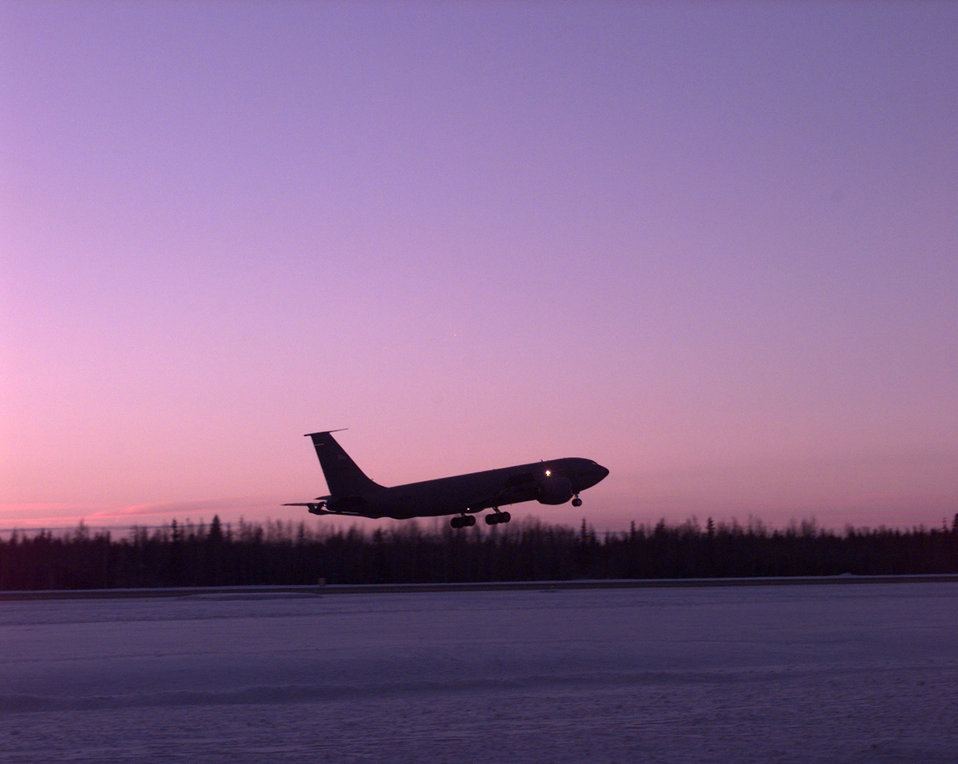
Alaskan refueler

OPERATION SOUTHERN WATCH -- Just as evening falls, the lead KC-135R from the 168th Air Refueling Wing, Alaska Air National Guard, takes off for a refueling mission. The force is made up exclusively of Reserve Forces from Air National Guard and the Air Force Reserve.